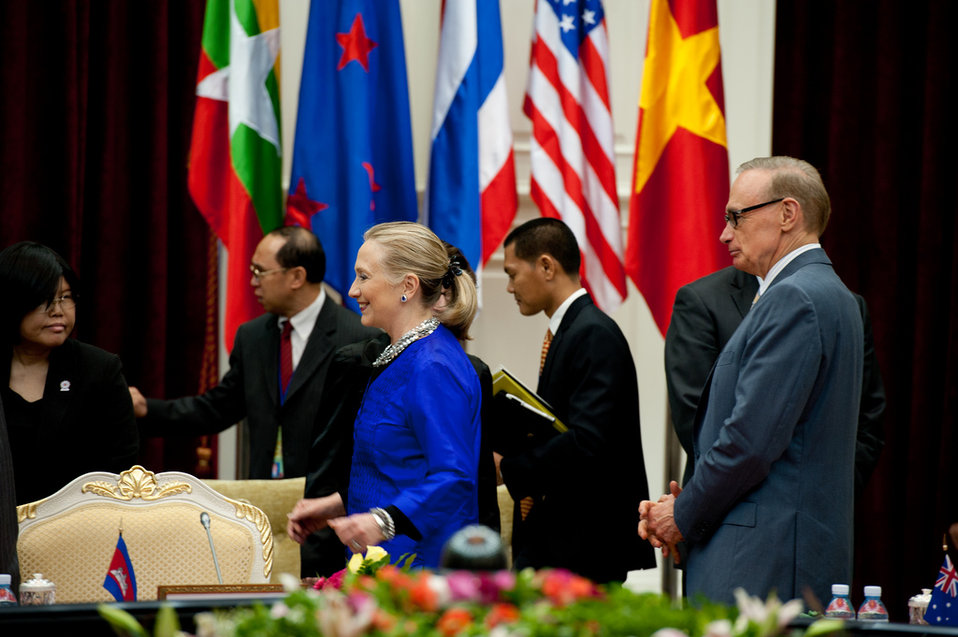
Secretary Clinton Participates in the Friends of Lower Mekong Ministerial Meeting

U.S. Secretary of State Hillary Rodham participates in the Friends of Lower Mekong Ministerial Meeting in Phnom Penh, Cambodia, on July 13, 2012.